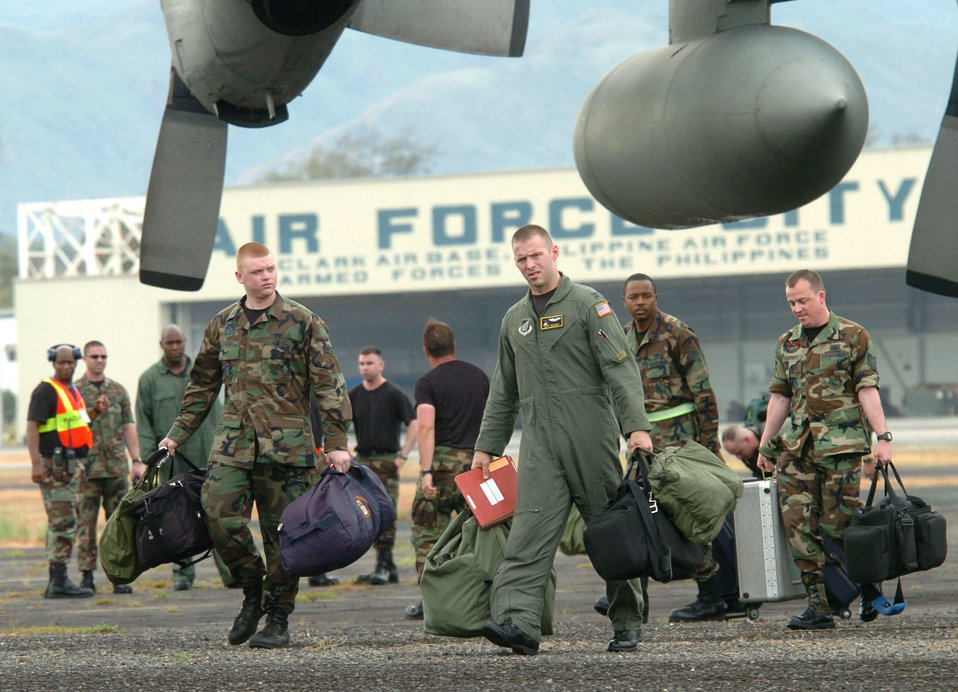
Airmen arrive for Balikatan 2004

CLARK AIRFIELD, Philippines -- Airmen from the 36th Airlift Squadron at Yokota Air Base, Japan, arrive here Feb. 23 to participate in exercise Balikatan 2004. More than 100 airmen and four C-130 Hercules aircraft from Yokota are participating in joint training with Philippine military forces. Exercise Balikatan helps improve combined planning, combat readiness and interoperability between U.S. and Philippine armed forces. About 2,500 U.S. troops and 2,300 Philippine forces will take part in the exercise.